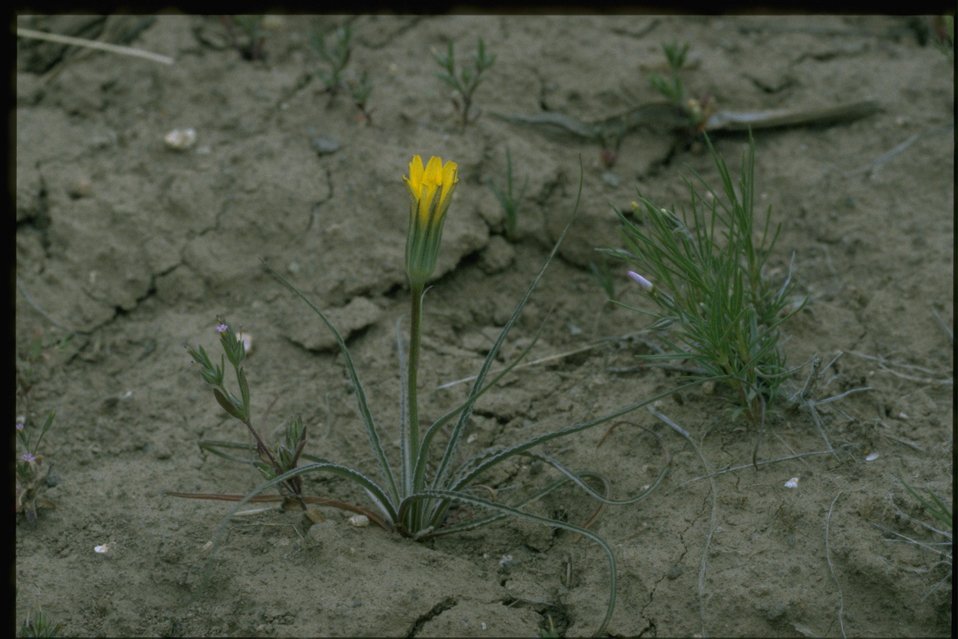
Farshot of False dandelion, Agoseris glauca.